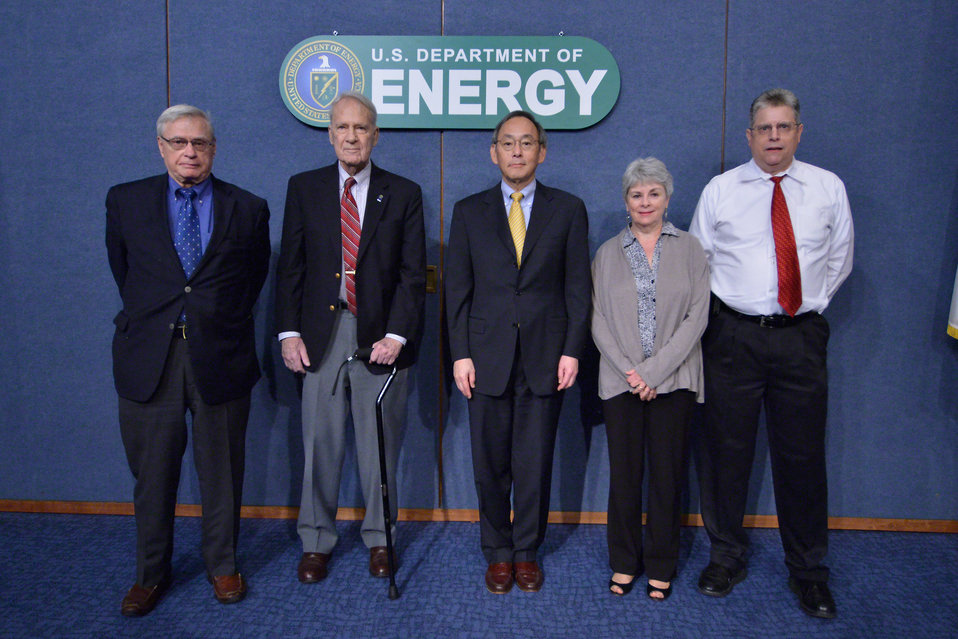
1 EERE

Charter employees from the Office of Energy Efficiency and Renewable Energy with Secretary Steven Chu, current Secretary of Energy, and Secretary James Schlesinger, first Secretary of Energy.